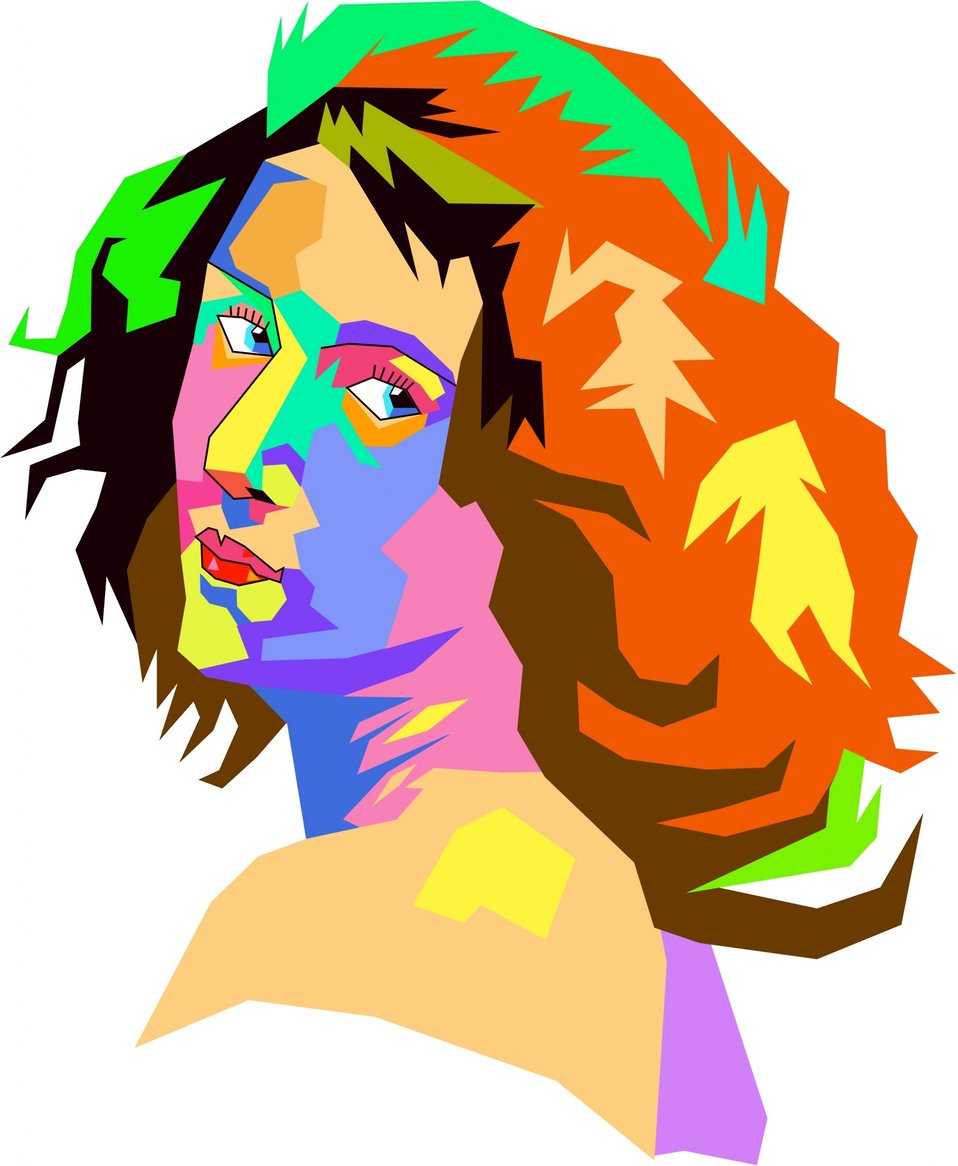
Pop art female face

Digitally created portrait of a lady made up of colourful block shapes..